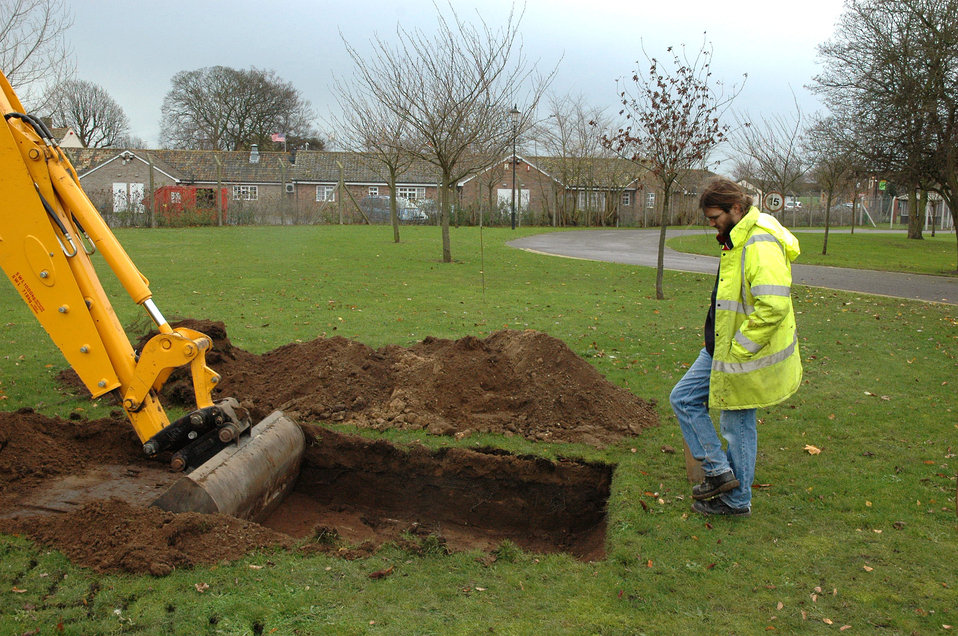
Future RAF housing site could be history's hiding ground

The United Kingdom requires all construction projects go through this dig to ensure no historical artifacts are destoyed. Project Officer John Craven overseas preliminary digging on the construction site as he keeps an eye out for objects of archeological significance. The United Kingdom requires all construction projects go through this dig to ensure no potential historical artifacts are destoyed.